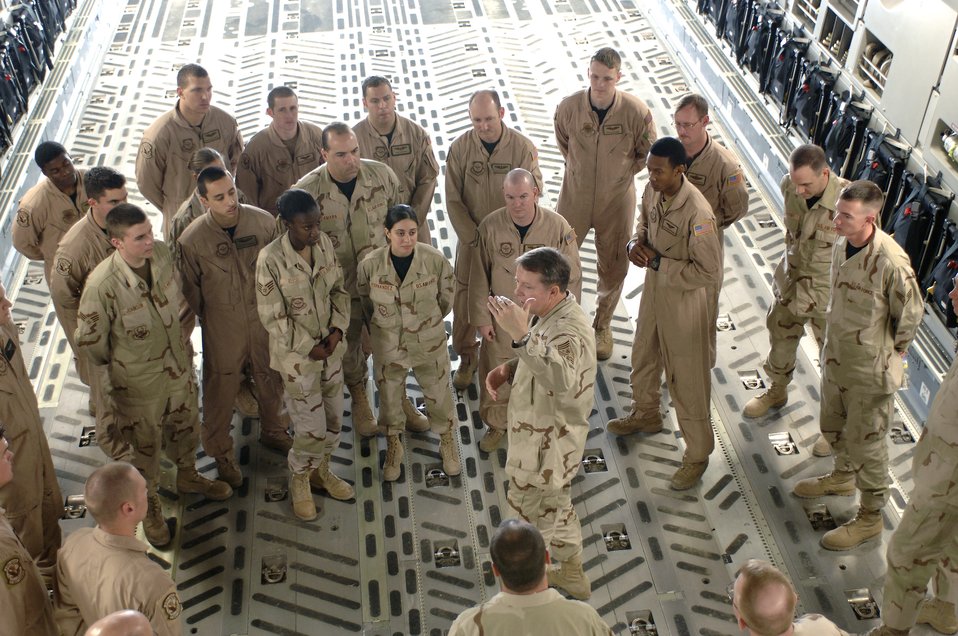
Leaders address deployments, total force concept

Chief Master Sergeant of the Air Force Rodney J. McKinley speaks to Airmen of the 816th Expeditionary Airlift Squadron Feb. 5 in Southwest Asia. Chief McKinley spoke to Airmen about changes in the Air Force that will be implemented in upcoming months.